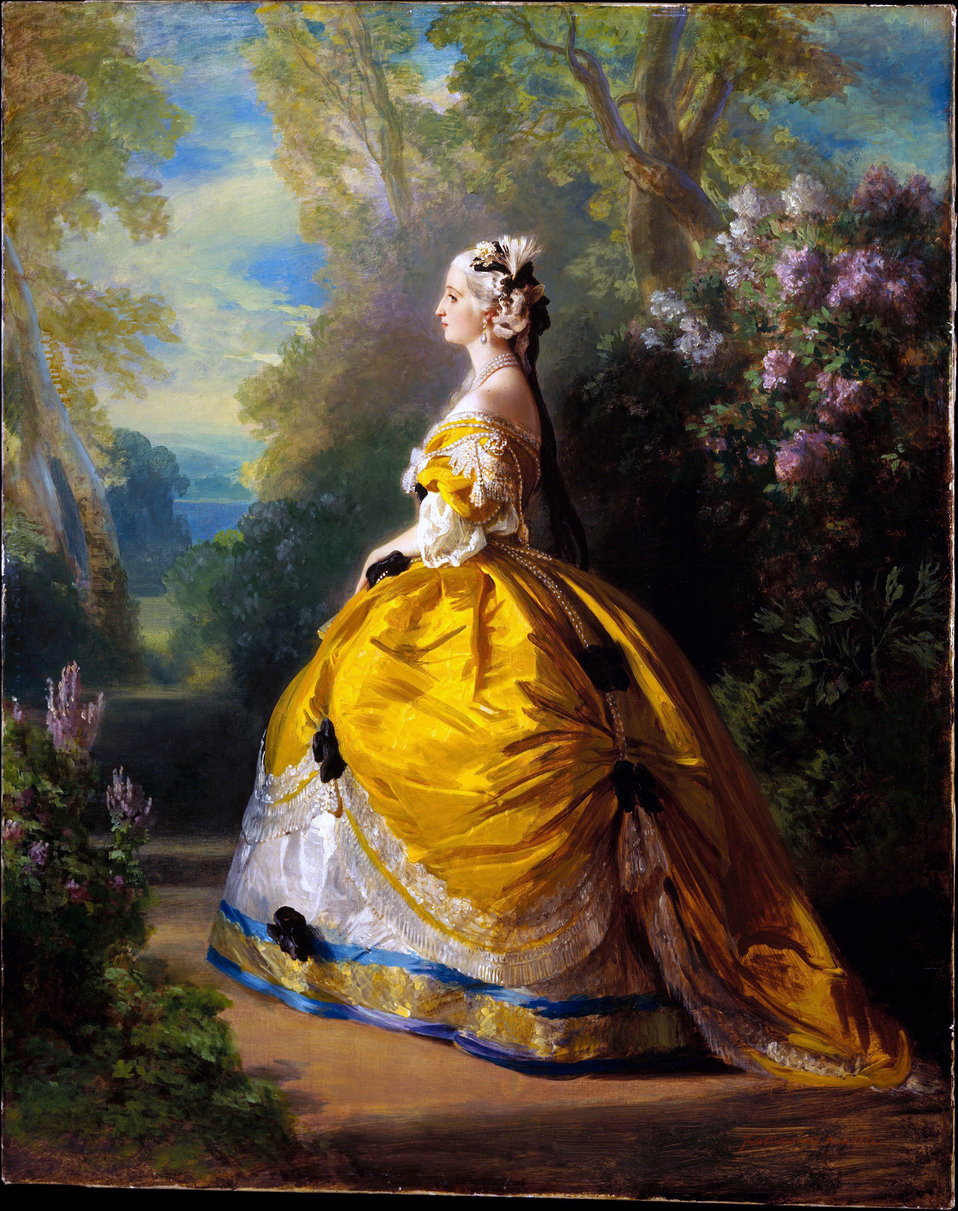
L'impératrice Eugénie à la Marie-Antoinette, 1854, Franz Xaver Winterhalter